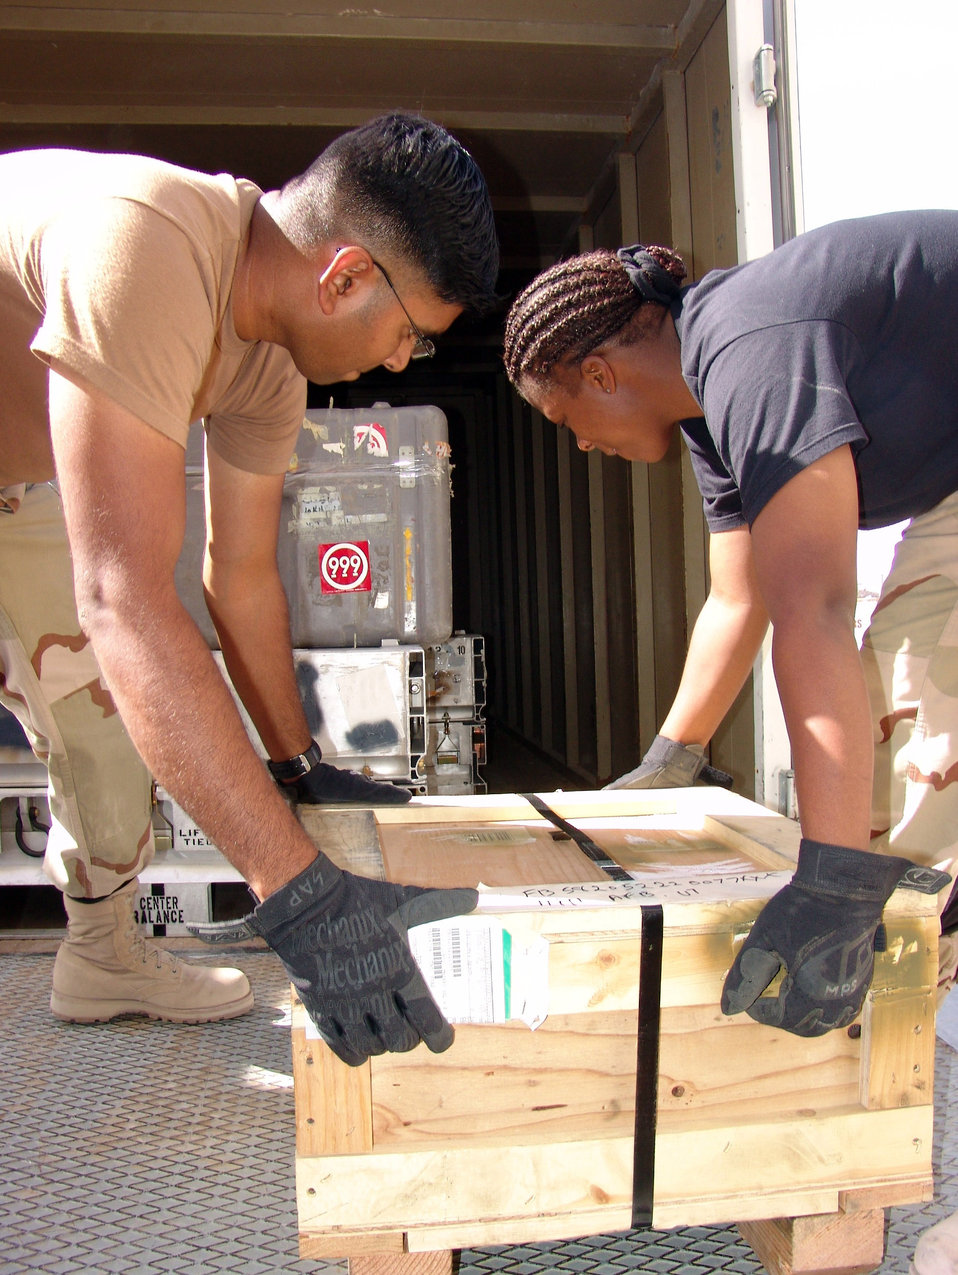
Supply issues

SOUTHWEST ASIA -- Airman 1st Class Sunil Patel (left) and Staff Sgt. Ebony Stewart load items marked for shipping in a delivery truck at the loading dock area. The Airmen are assigned to the 386th Expeditionary Logistics Readiness Squadron's traffic management office at a forward-deployed location. The TMO outbound freight section prepares an average of 50 to 100 shipping crates daily. The Airmen are deployed from Little Rock Air Force Base, Ark.